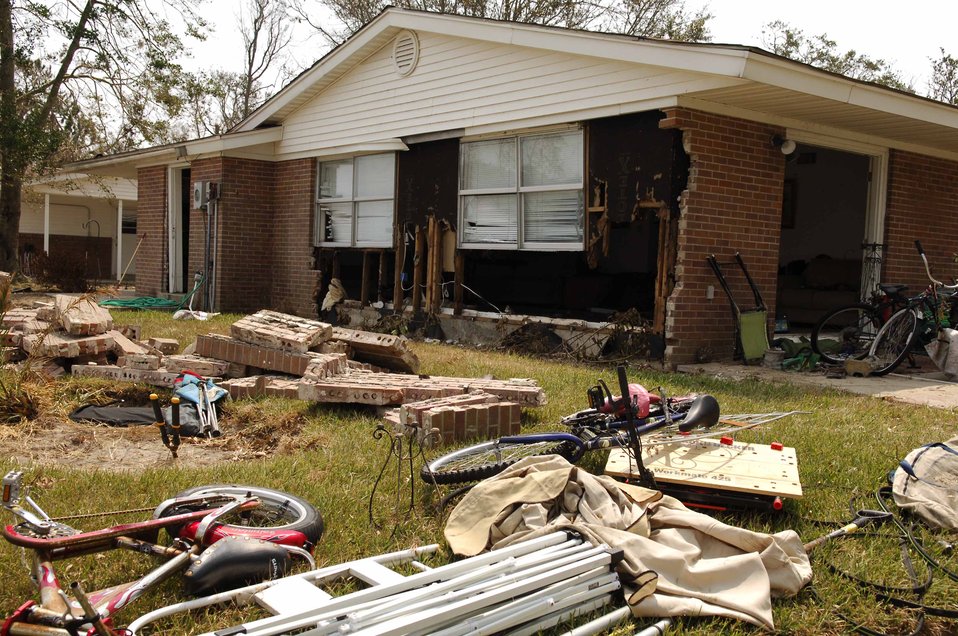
Displaced Airmen return to Keesler AFB for first time after hurricane

KEESLER AIR FORCE BASE, Miss. -- Personal belongings and parts of walls are strewn about the backyard of a home on the perimeter of the Bay Ridge housing area here. Hurricane Katrina's high winds and storm surge downed trees, engulfed homes in debris and destroyed houses in the area.